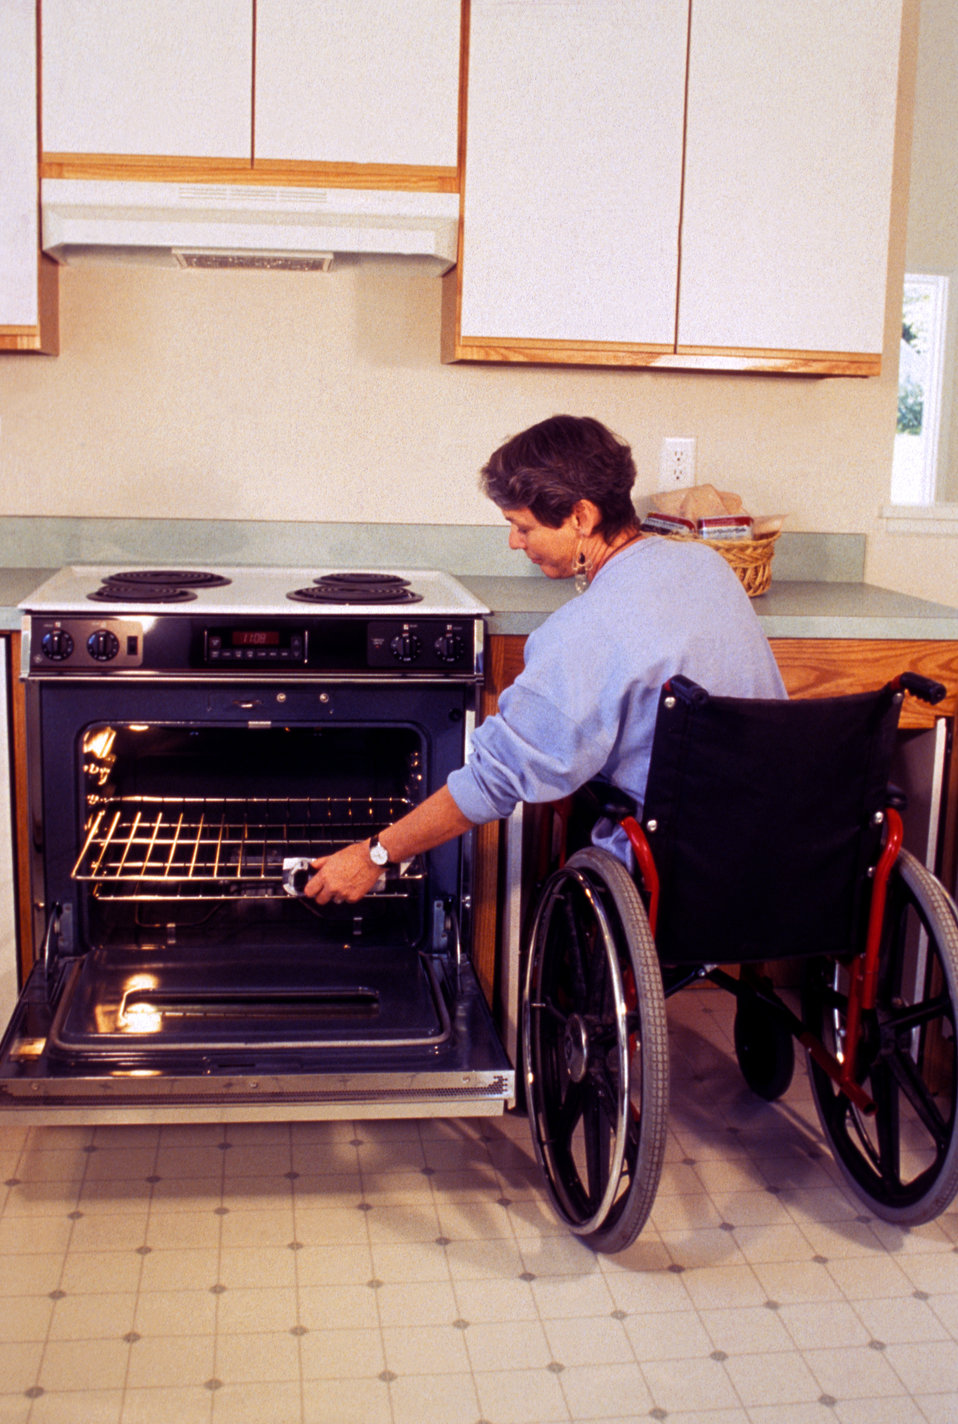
This 1994 image depicted a woman seated in her wheelchair inside a kitchen in which the cabenitry had been ergonomically-designed so as to accommodate the widest possible group of end users. These kitchen base cabinets easily converted into knee-spaces critical for people using wheelchairs, as well as those with stamina or balance limitations, who had to sit while completing extended food-preparation activities. The cabinet design included retractable doors that could be slid underneath the counter, and rolling cart storage that could be removed, thereby, opening up the knee-spaces, which accommodated wheelchair users quite comfortably. Note that the adaptable cabinet had been located in a place that would assist with both the use of the range, and facilitate in reaching wall cabinets above.